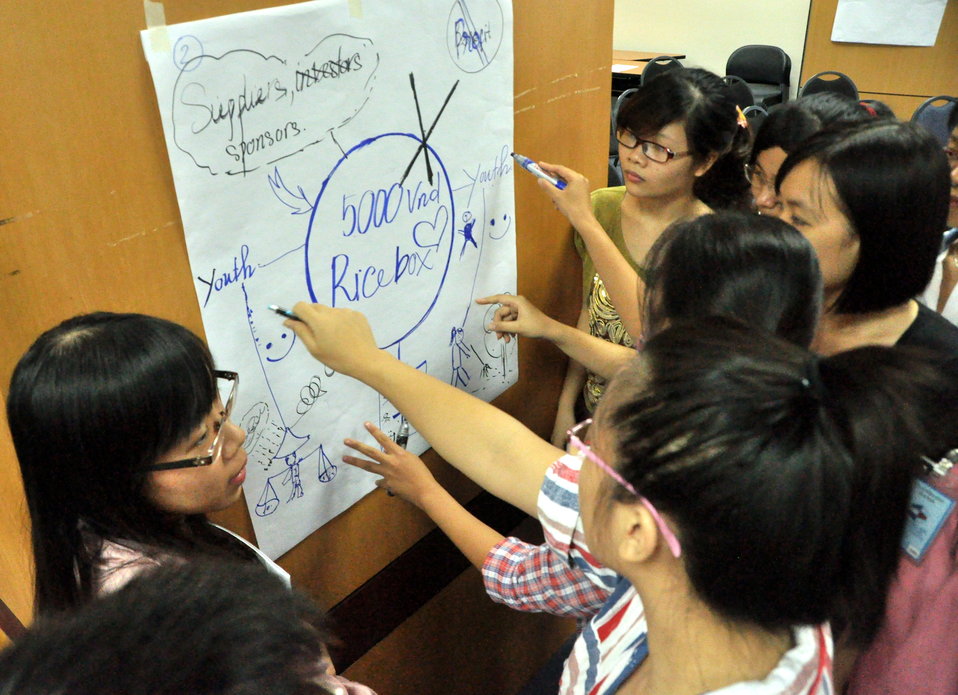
International Youth Day 2013: USAID hosts a lively discussion and group exercise on how youth can join in to advance development0692

Hanoi, August 12, 2013.